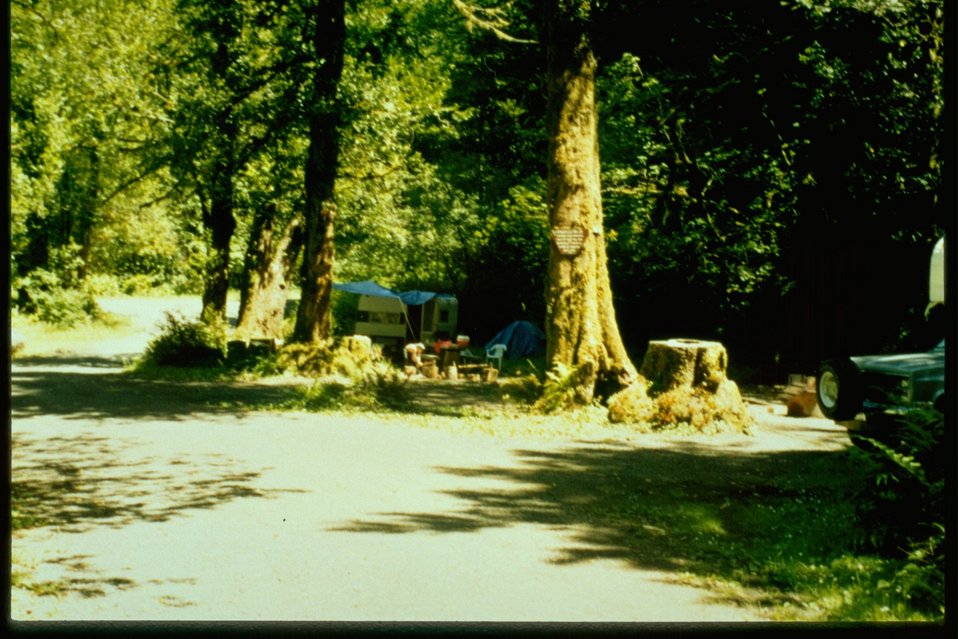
Bear Creek Recreation Site.